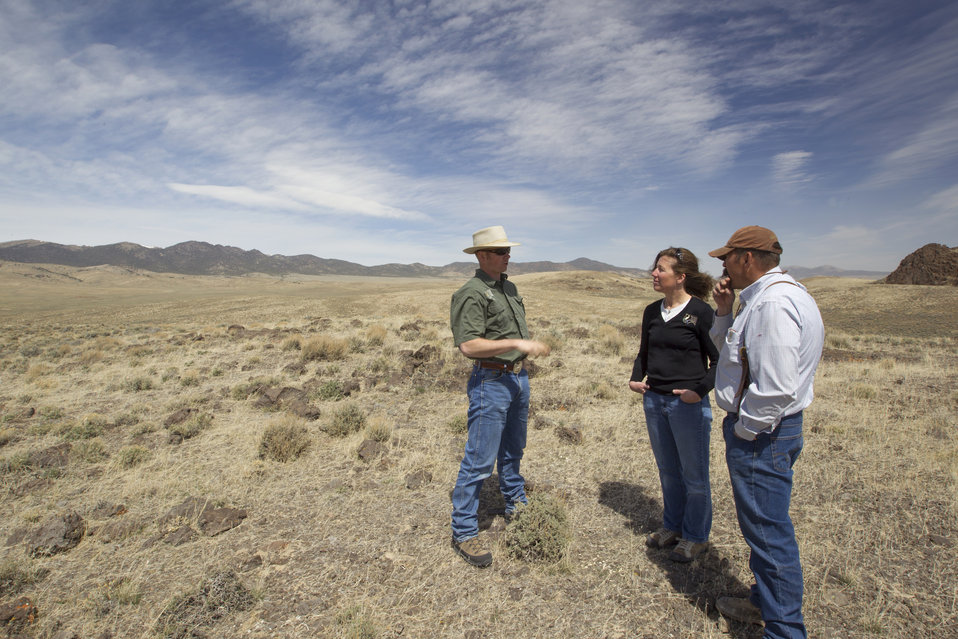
Landowner with Partners for Fish & Wildlife Program Biologists